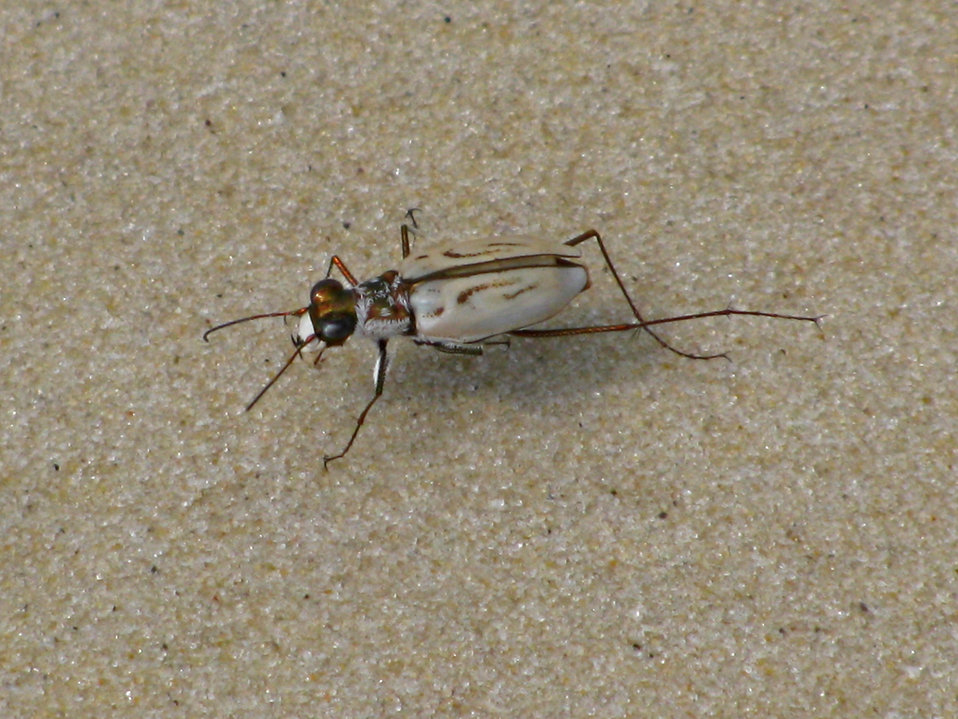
Northeastern beach tiger beetle

The federally threatened beetle depends on undisturbed beach habitat at Plum Tree Island National Wildlife Refuge, VA for survival.